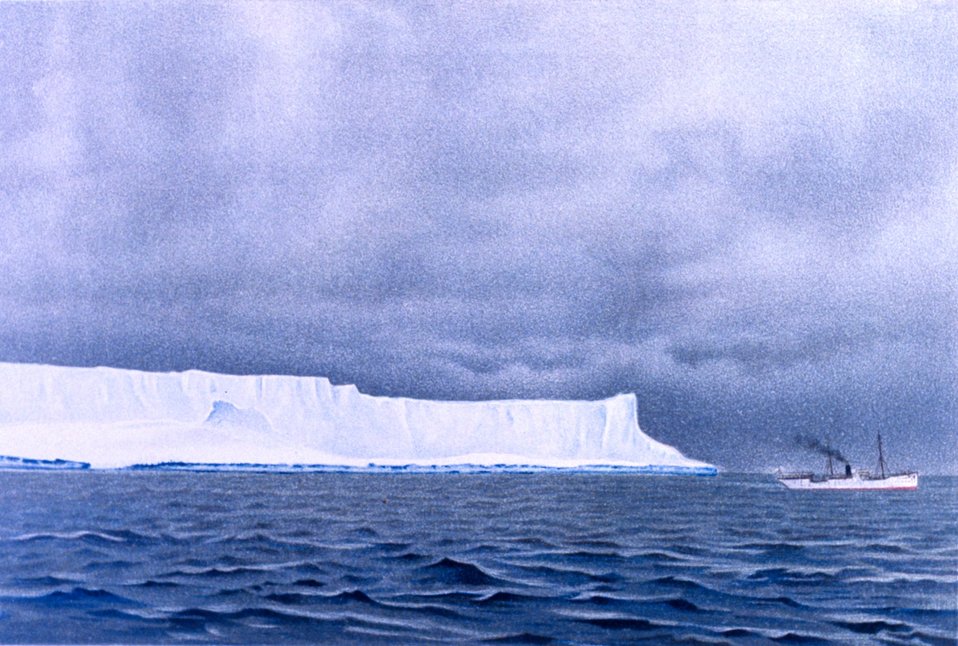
Iceberg seen on December 7, 1898. Watercolor by F. Winter. The VALDIVIA is dwarfed by the iceberg. In: 'Aus den Tiefen des Weltmeeres' by Carl Chun, 1903. Call No. Q115.V15 1903.